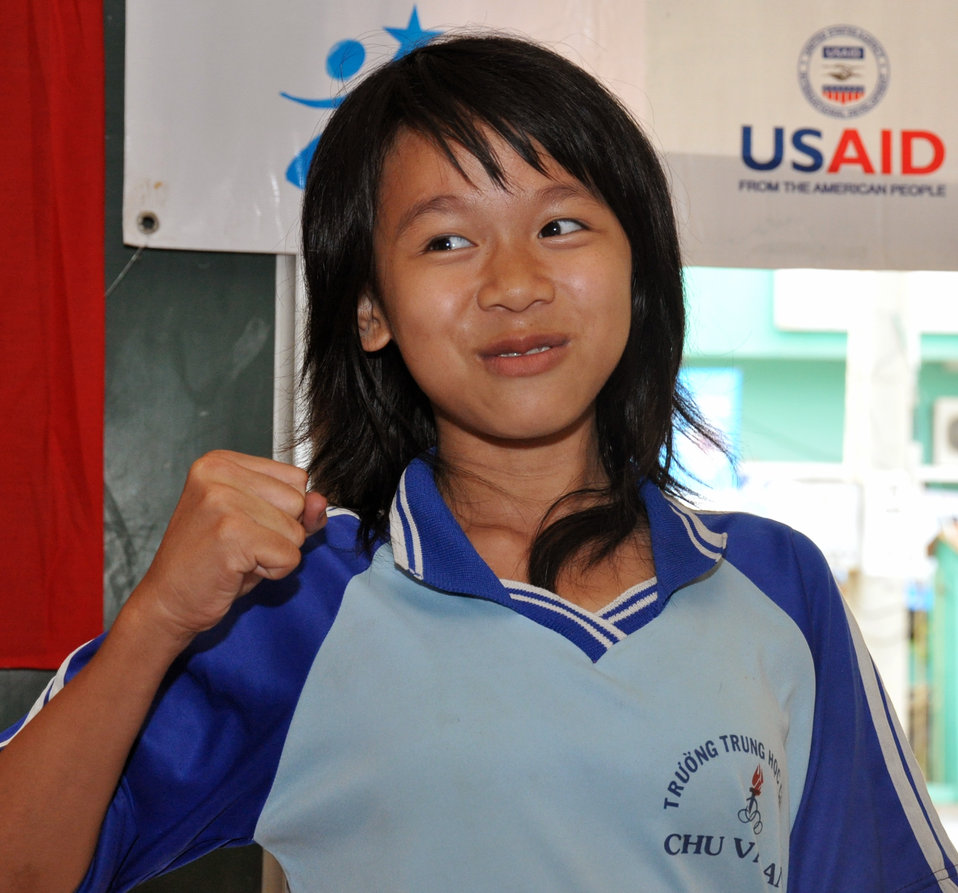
Supporting Girls Education in Vietnam